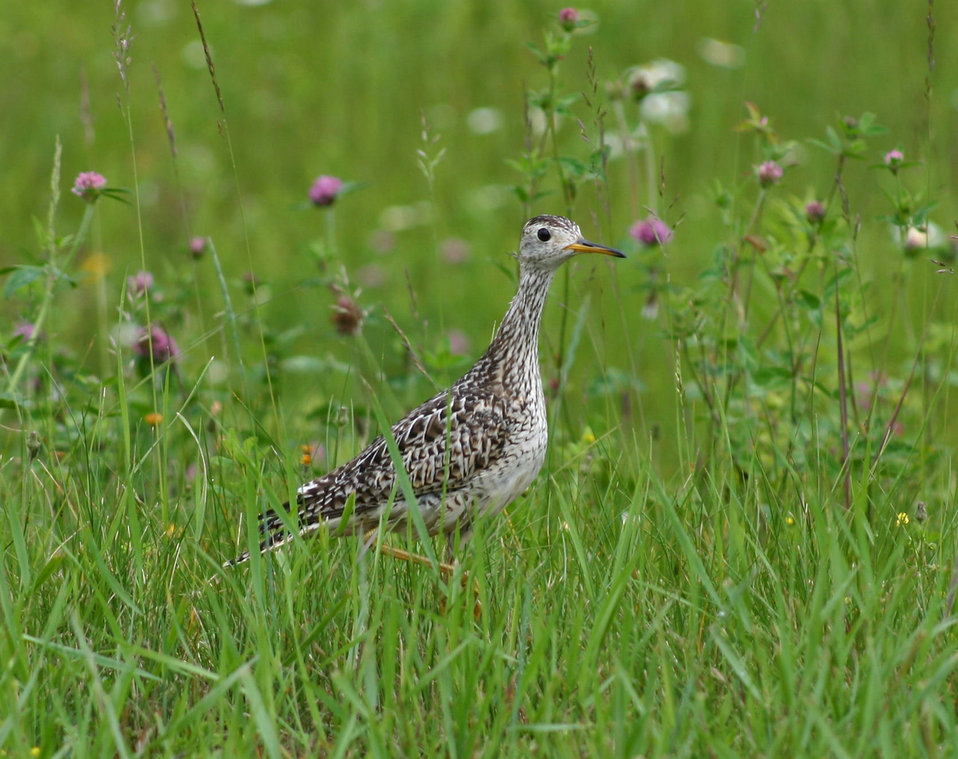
Sandpiper

Aroostook National Wildlife Refuge, ME.